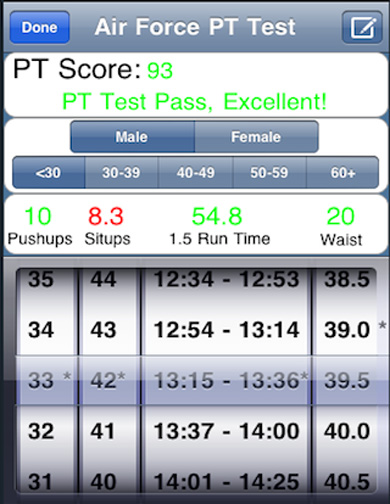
Airman develops PT calculator app

A screen shot of AF Tracker, an application available through iTunes that allows Airmen to calculate their fitness test scores on their smart phone or mp3 player. Senior Airman Julio Medina, a security forces member with the 6th Space Warning Squadron, created the application.